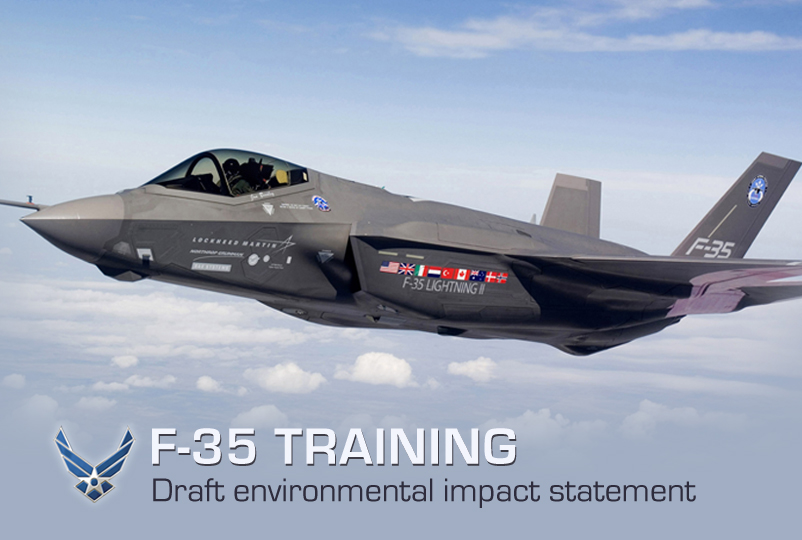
F-35 Training